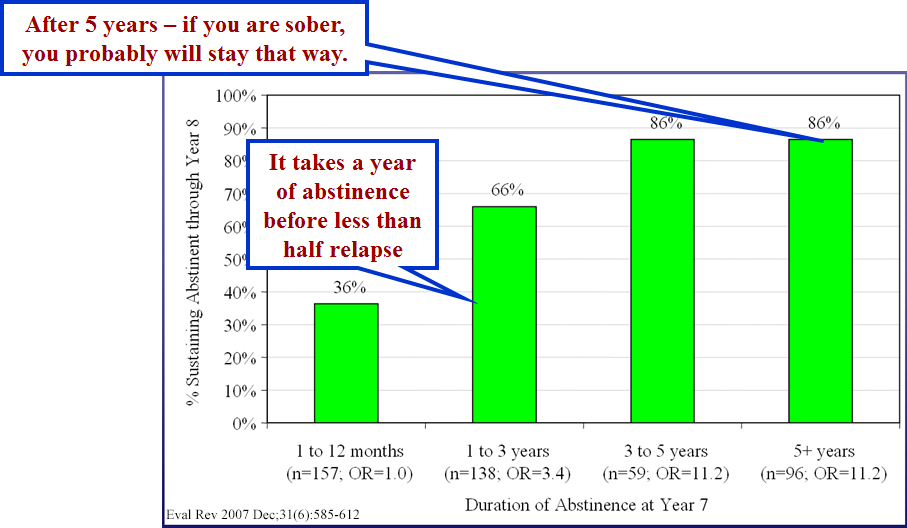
Abstinence

Extended Abstinence is Predictive of Sustained Recovery